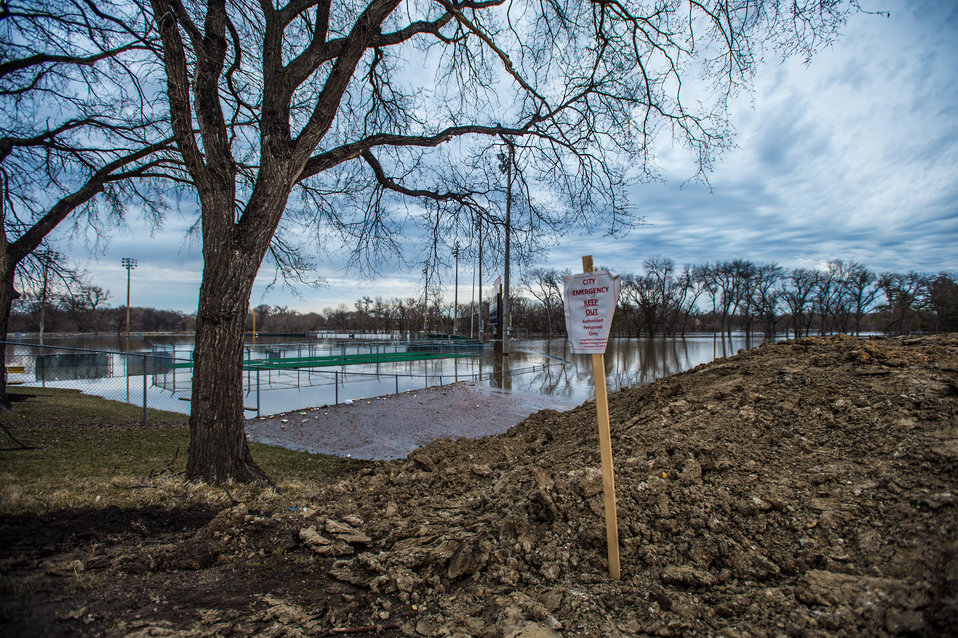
View of Jack Williams Stadium facility in Mickelson Field, with Red River flood waters, at 11th Ave. N. and Elm St. in Fargo, N.D. on Monday, Apr. 29, 2013. To learn about the Red River Basin Initiative, see www.mn.nrcs.usda.gov/news/features13/RRBI.html.